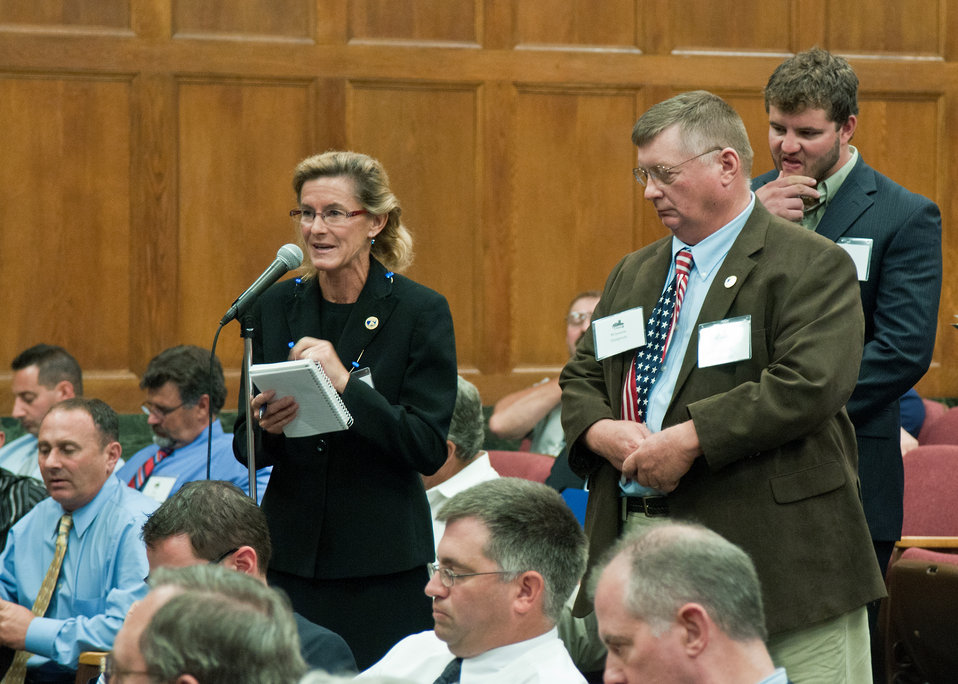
New Mexico Food and Agriculture Policy Council, Santa Fe, NM Pam Roy and other members of the National Farmer’s Union were able to ask questions to Agriculture Secretary Tom Vilsack at the U.S. Department of Agriculture during their annual Legislative Fly-In in Washington, D. C. on Monday, Sept. 12, 2011.